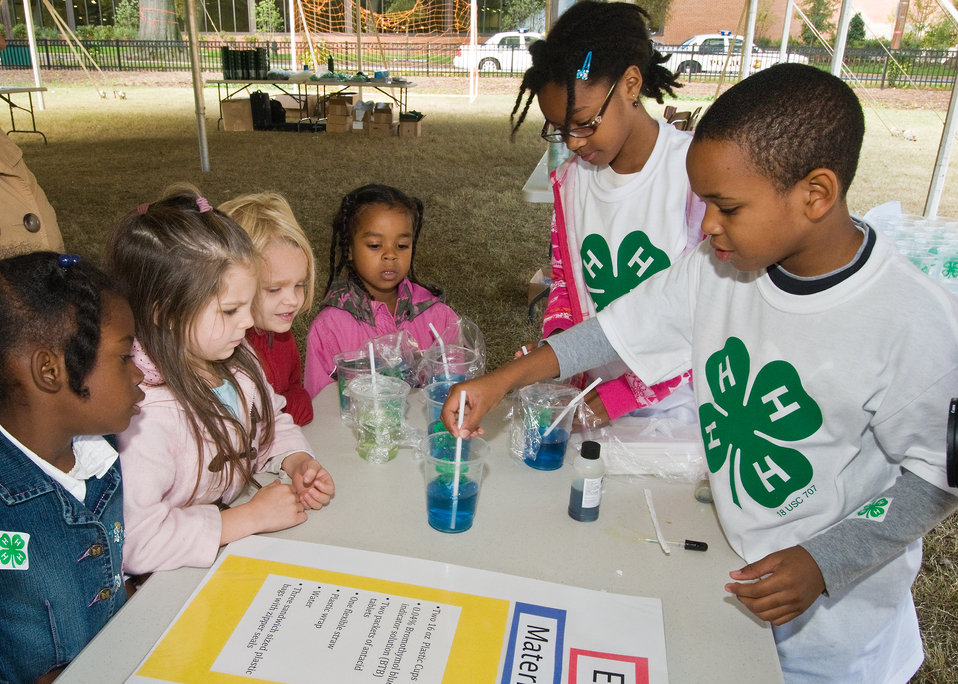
Charles Johnson and Alyssa Campbell fifth grade students demonstrate the effects of carbon dioxide on the atmosphere and what we can do to replace our carbon footprint at Hearst Elementary School in Washington, DC. The experiment was part of the 4-H National Youth Science Day, National Science Experiment, 4-H2O, Tuesday, October 6, 2010. USDA Photo 10di1518-16 by Bob Nichols.